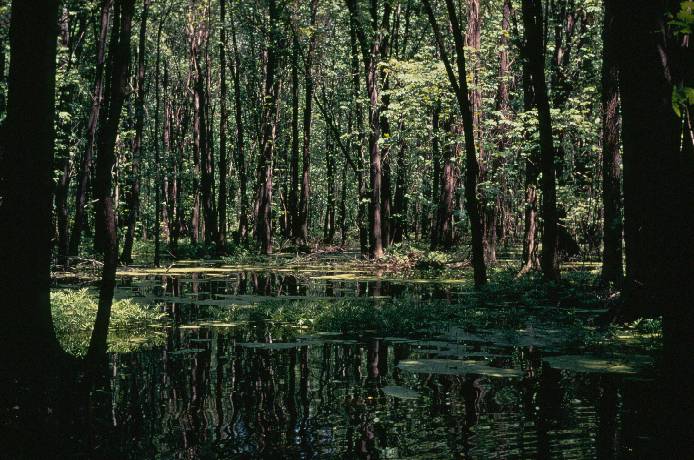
Forested wetlands are one of many habitats at Iroquois National Wildlife Refuge in New York.